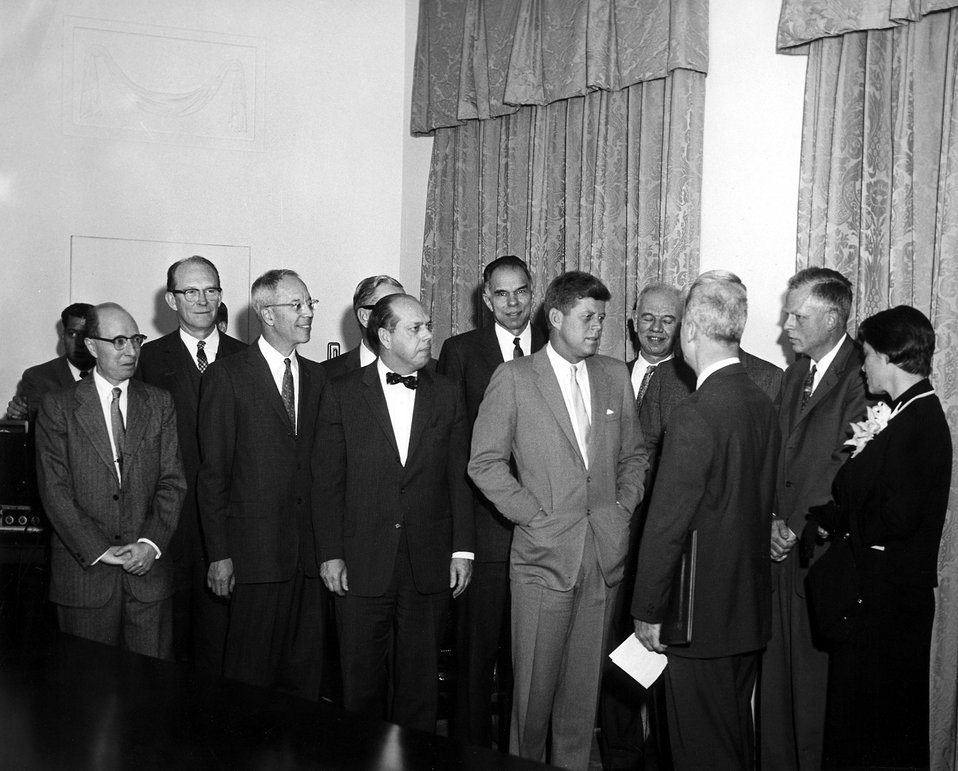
Hans Bethe, 1961..